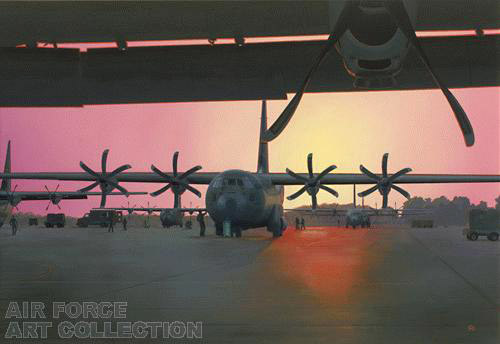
Artists document Rodeo competition

This art piece in the Air Force art collection entitled,